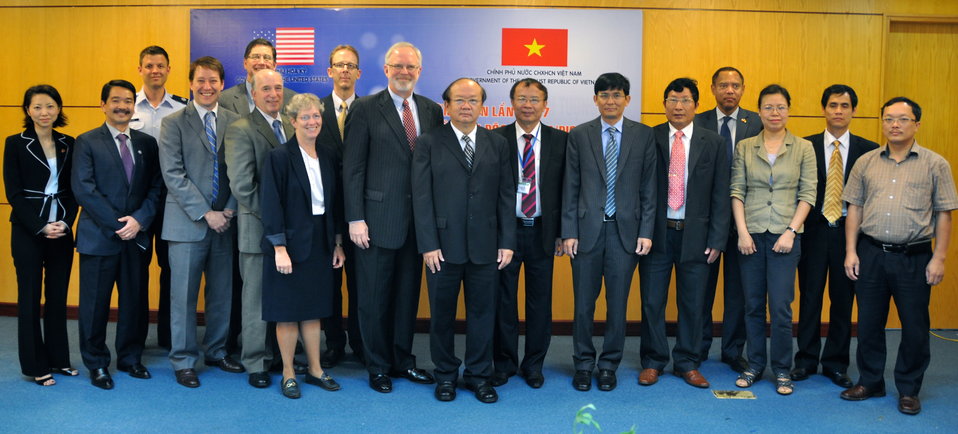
Seventh U.S.-Vietnam Advisory Committee Meeting (JAC)

Hanoi, September 20, 2012